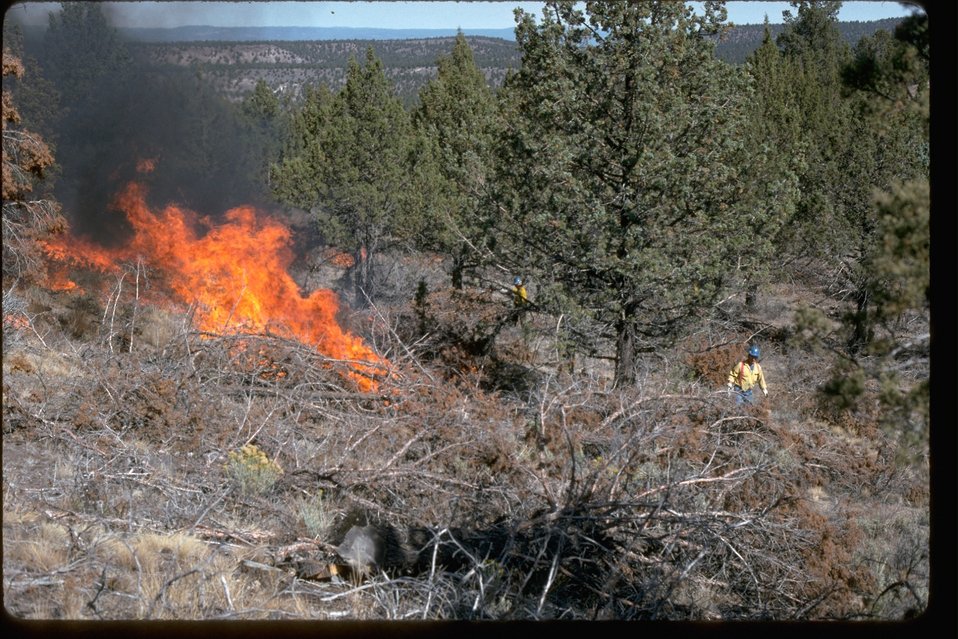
This photo is of a multi-phased project. Juniper was initially cut to get fuel on the ground and after a year of curing it was burned. It was part of a project to eliminate junipter in an aspen stand. Total project was about 100 acres. It was burned in late summer and was successful in meeting objectives of releasing aspen. Part of the project involved leaving some downed junipter as a barrier to keep elk out of areas where aspen sprouted.